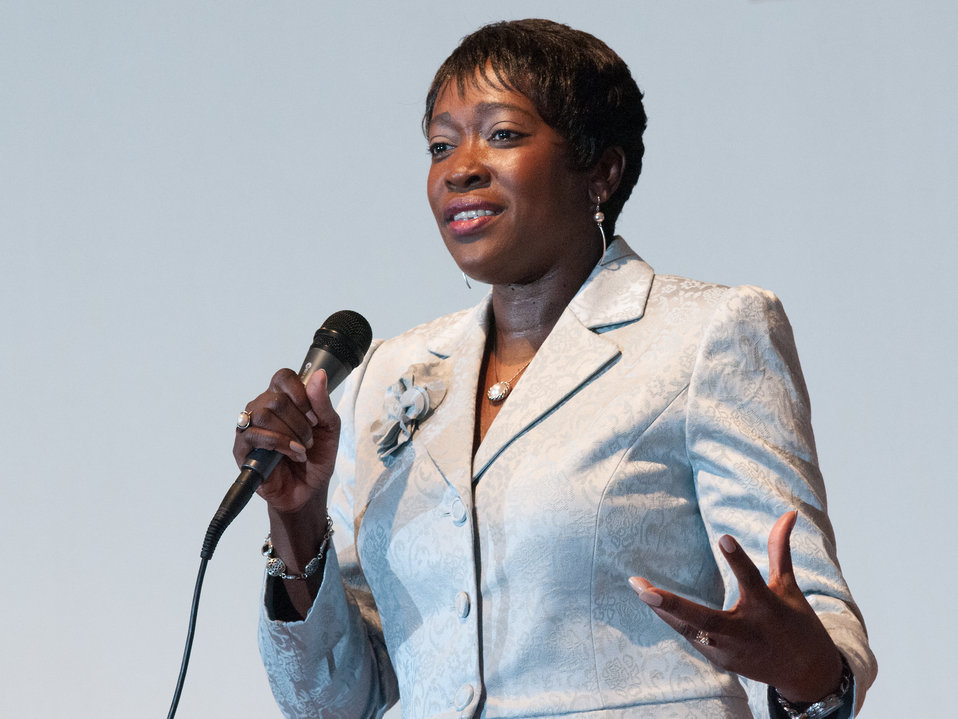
U.S. Department of Agriculture (USDA) Departmental Management Office of Advocacy and Outreach Director Carolyn Parker provided opening remarks to approximately 300 youth members, Extension Educators and 4-H Adult Volunteers from across the nation, as well as U.S. Territories at the 2013 National 4-H Conference, on Monday, April 8, 2013 in Chevy Chase, MD. National Institute of Food and Agriculture Director Dr. Sonny Ramaswamy provide additional remarks and Secretary Tom Vilsack will deliver the keynote address. The youth delegates are in grades 10-12 (15-19 years old). The purpose of the conference is to 1) engage 4-H youth in personal development experiences that will increase knowledge, resources, and skills; 2) discuss topics affecting youth and 4-H programming nationwide; and 3) empower and mobilize 4-H youth to create positive social change in their communities in a meaningful and genuine way. The conference also reinforces the rich history of 4-H and its valuable tie to USDA, Cooperative Extension and the Land-Grant University System.